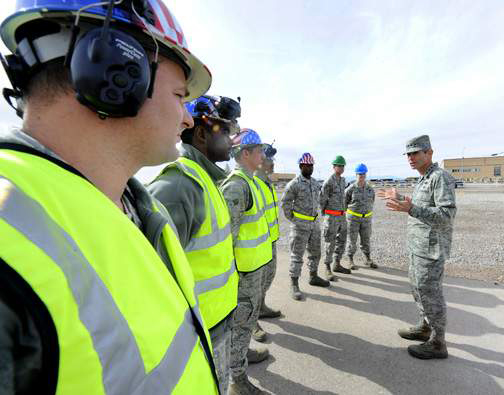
Holloman visit by chief of staff highlights contributions of America's Airmen

Air Force Chief of Staff Gen. Norton Schwartz speaks with Airmen of the 49th Material Maintenance Group during his visit to the Basic Expeditionary Airfield Resources Base Jan. 27, 2010, at Holloman Air Force Base, N.M. General Schwartz visited Holloman AFB to see Airmen and operations firsthand.